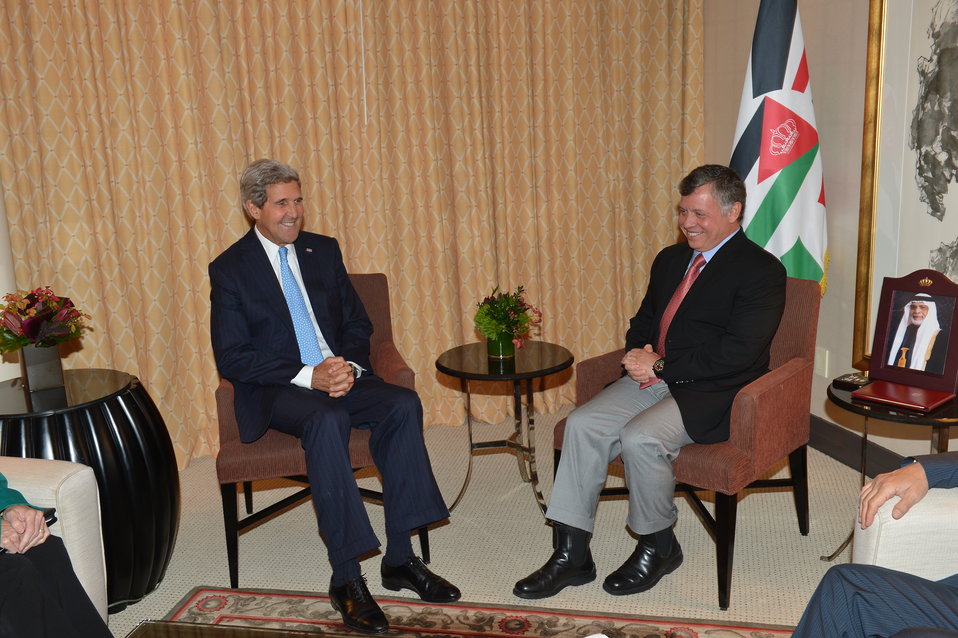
Secretary Kerry Meets With Jordanian King Abdullah

U.S. Secretary of State John Kerry holds a bilateral meeting with Jordanian King Abdullah in New York City on September 22, 2013.